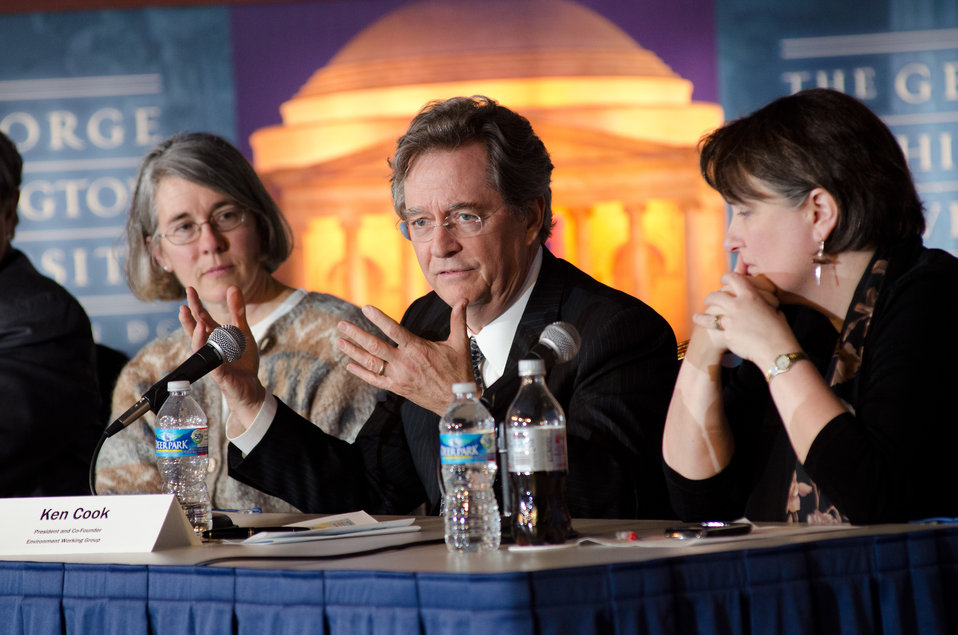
Environmental Working Group President and Co-Founder Ken Cook (center) responds to a question about subsidies and it’s relationship with international trade during the “Shaping the Farm Bill for a Sustainable Future” Forum in the Jack Morton Auditorium, at the Trachtenberg School of Public Policy and Public Administration, on the George Washington University campus in Washington, D.C., on Thursday, March 1, 2012.